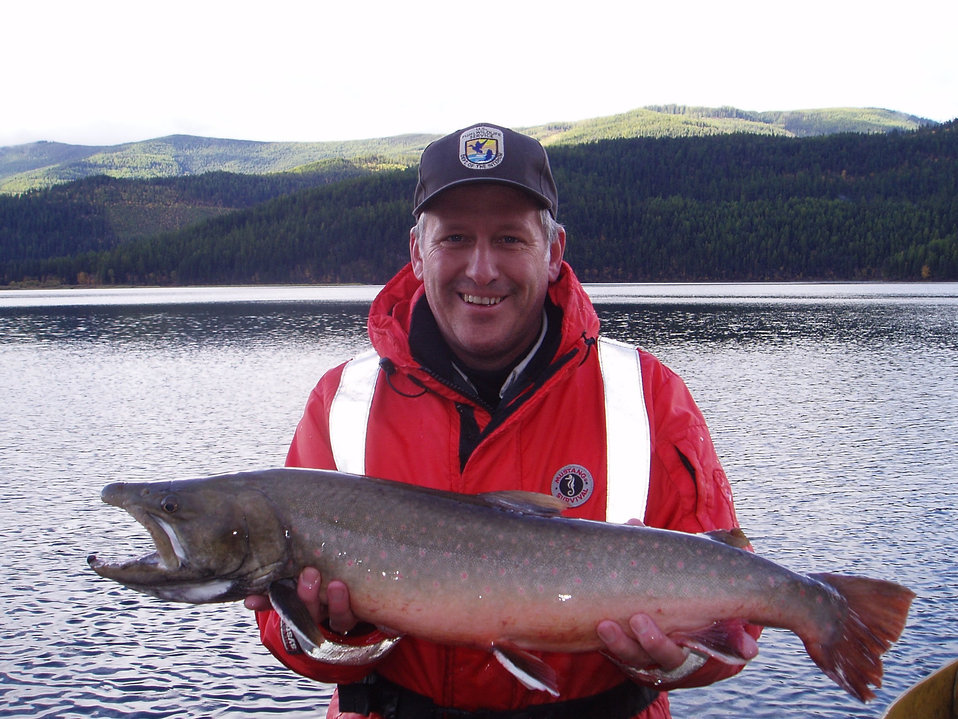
Bull Trout - Swan Lake, MT